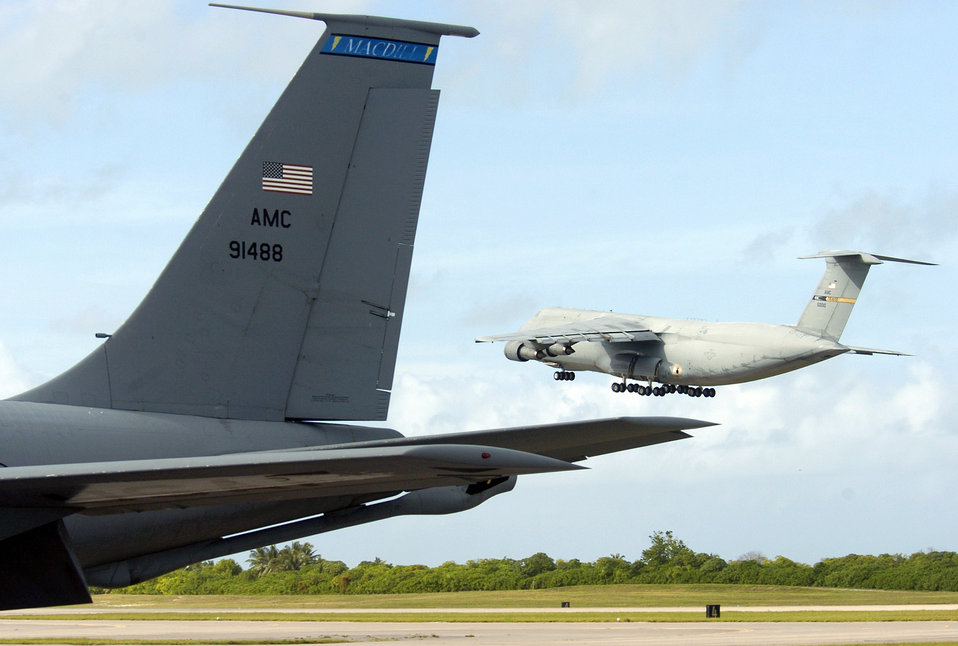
Intercontinental ranges

A C-5 Galaxy takes off from a forward operating location today. The C-5 is one of the largest aircraft in the world. The aircraft carries fully equipped combat-ready military units to any point in the world on short notice then provides field support required to help sustain the fighting force. Ground crews can load and off load the C-5 simultaneously at the front and rear cargo openings.